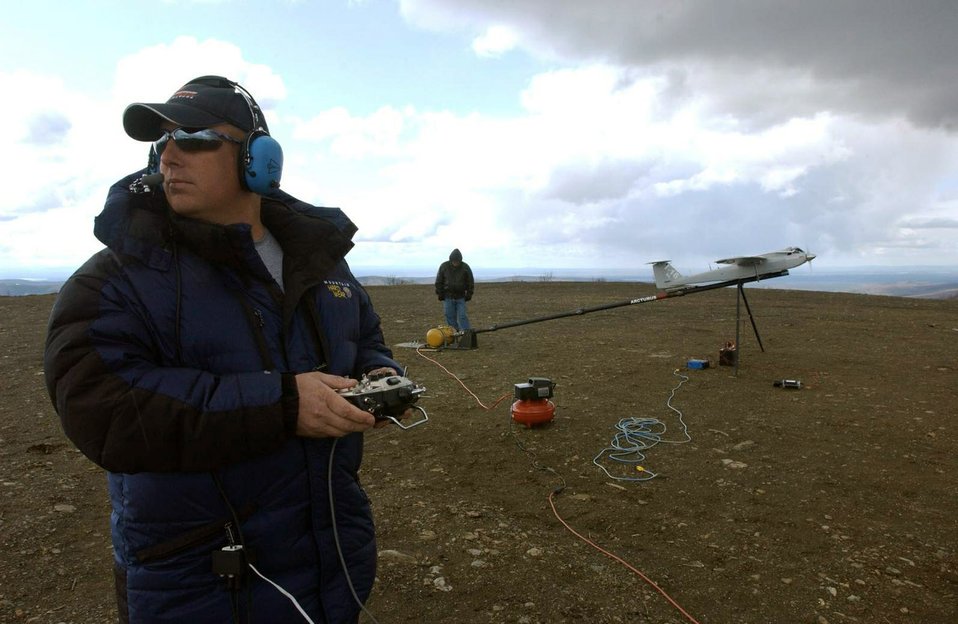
Force multiplier more than buzz word

Red Jensen prepares to launch the prototype of the Arcturus unmanned aerial vehicle May 7 during Northern Edge 2008, at a test site in the Pacific Alaska Range Complex. The UAV is a brainchild of the Air Force Research Laboratory and is designed for a myriad of aerial reconnaissance, monitoring and communications duties. Mr. Jensen is the chief pilot for the Arcturus UAV.